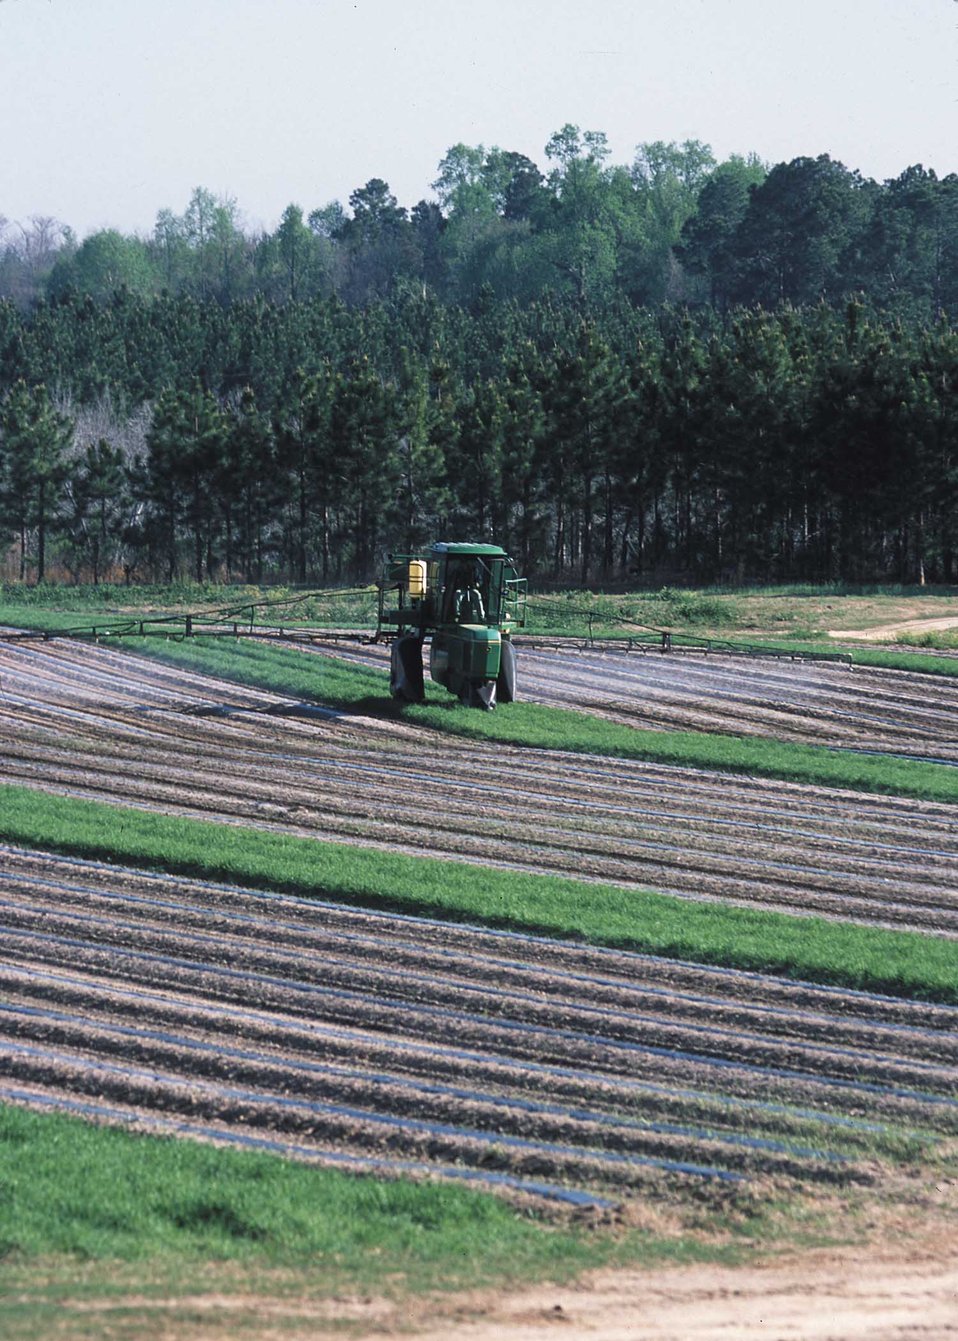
Farmer spraying pesticide as part of pest management plan. Georgia.